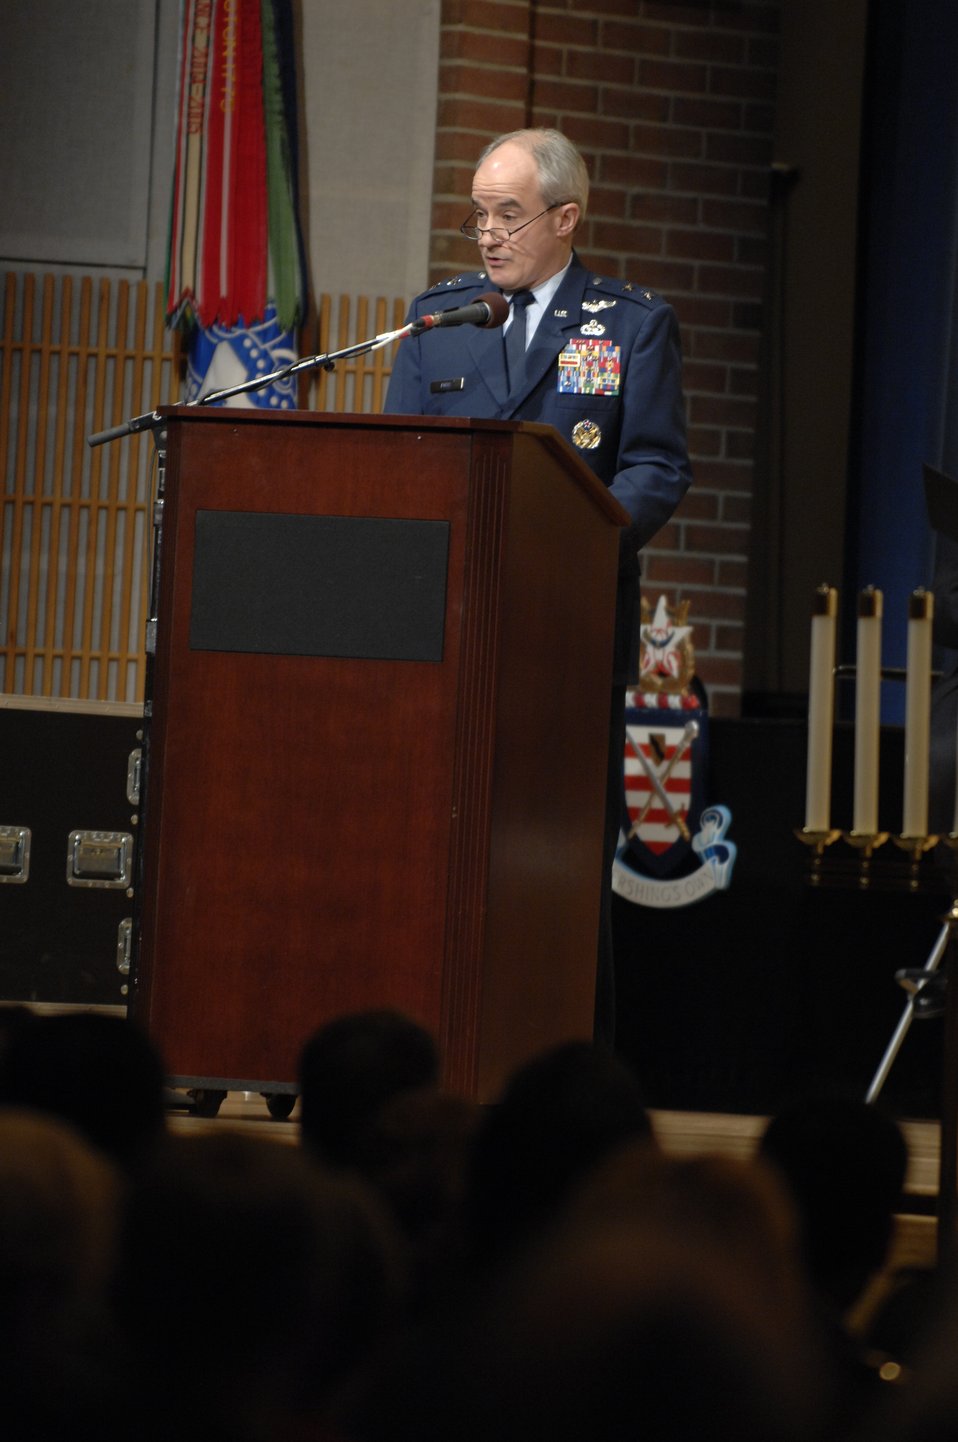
Maj. Gen. James Poss

Maj. Gen. James O. Poss is a guest speaker during the 20th anniversary of the Gulf War remembrance ceremony March 13, 2011, at Joint Base Myer-Henderson Hall in Virginia. General Poss is the Air Force Assistant Deputy Chief of Staff for Intelligence, Surveillance and Reconnaissance.